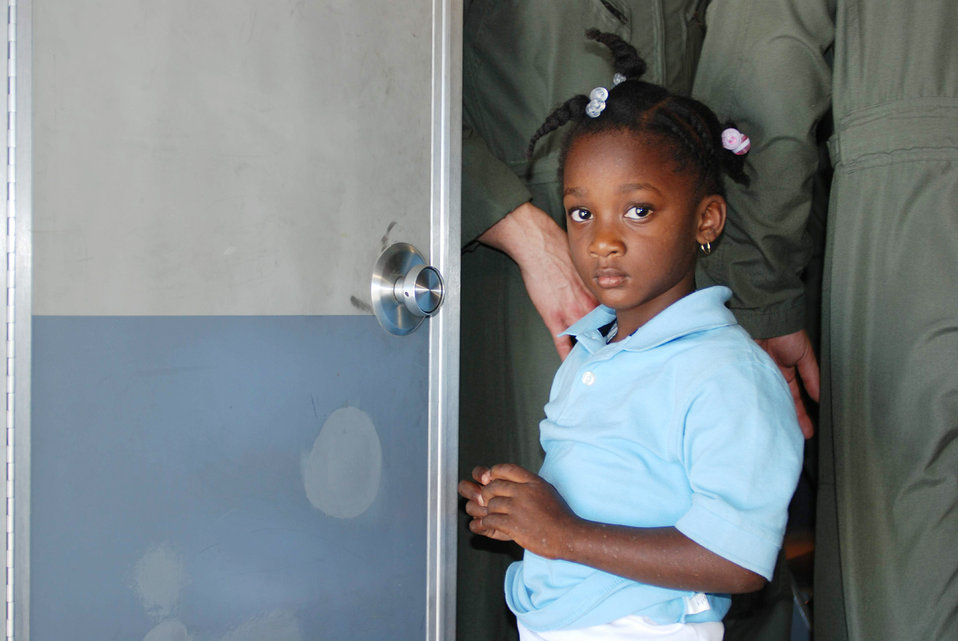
March C-17 crew completes mission to Haiti

A young girl waits patiently to use the lavatory after boarding a C-17 Globemaster III Jan. 29, 2010, in Port-au-Prince, Haiti. Behind her, two crewmembers from the 729th Airlift Squadron from March Air Reserve Base, Calif., prepare to fly the load of 176 passengers to Orlando Sanford International Airport in Florida.